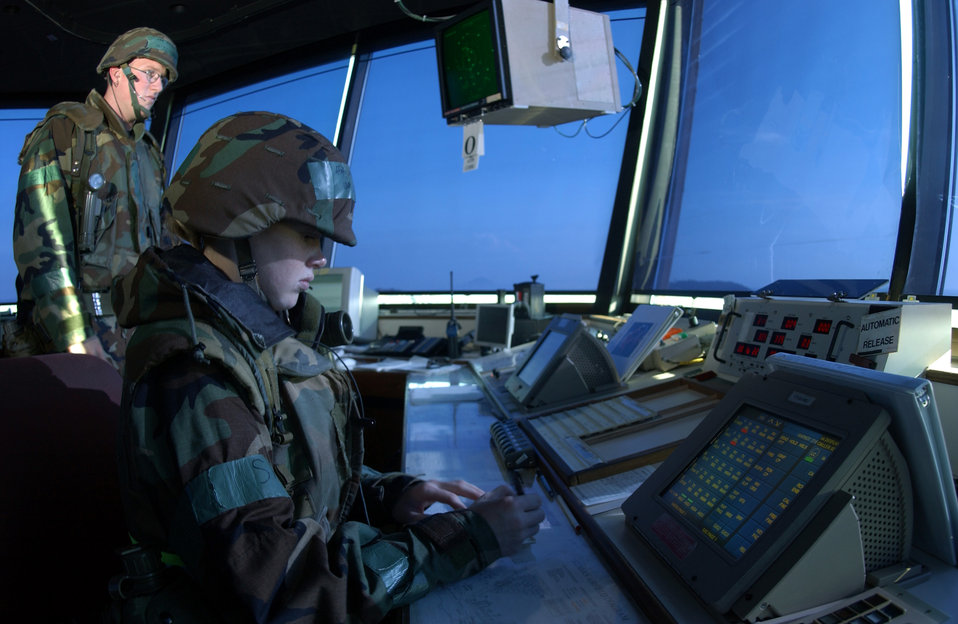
We've got a visual

KUNSAN AIR BASE, South Korea -- Senior Airman Todd Patino and Staff Sgt. Jessica Chatigney (foreground) perform air traffic control duties here Aug. 24. Both Airmen are assigned to the 8th Operations Support Squadron.